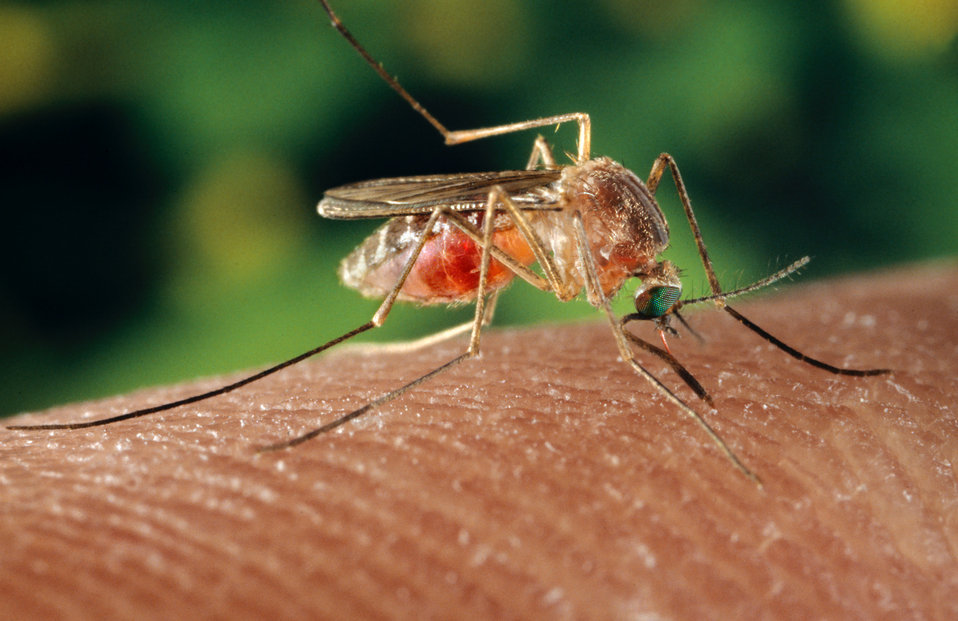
A Culex quinquefasciatus mosquito on a human finger.